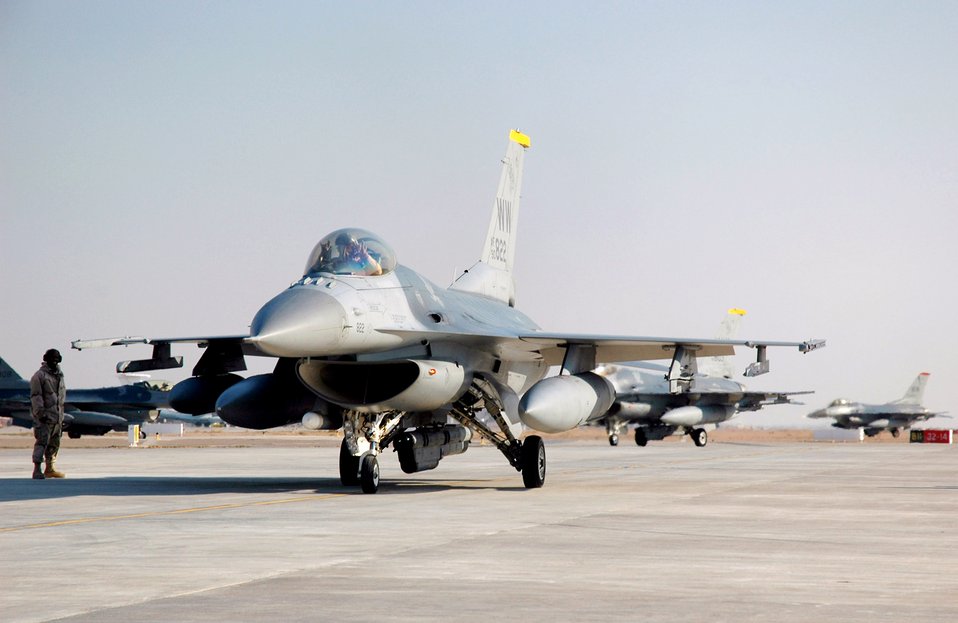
Airpower summary for Aug. 28, 2007

An F-16 Fighting Falcon arrives at Balad Air Base, Iraq, after a mission. F-16s fly close air support sorties for Operation Iraqi Freedom. F-16s and other coalition aircraft flew 50 CAS missions Aug. 28.